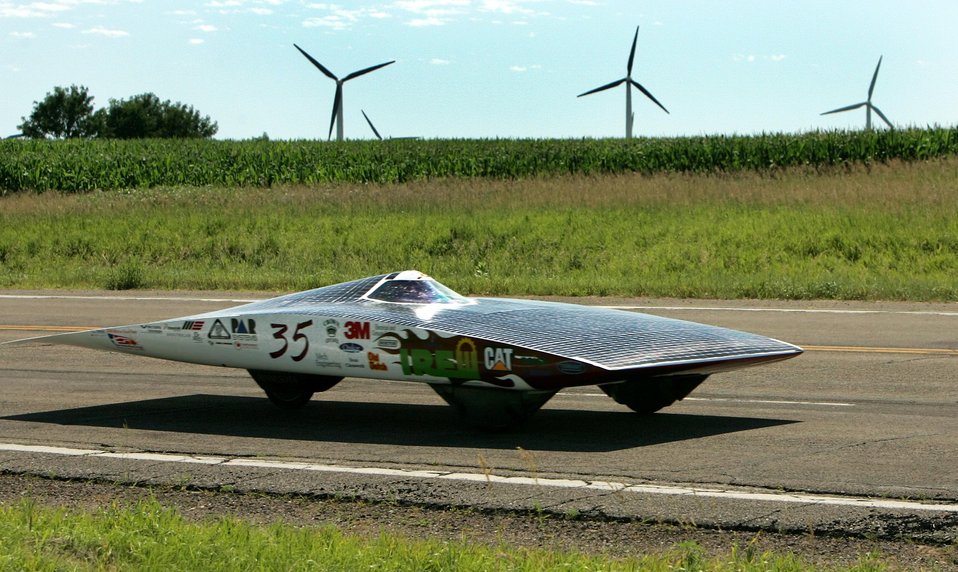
UNIVERSITY OF MINNESOTA IS SHOWN GOING THROUGH ITS HOME STATE PASSING BY LAKE BENTON, MINNESOTA, ALSO KNOWN AS THE ORIGINAL WIND POWER CAPITAL OF THE MIDWEST DURING THE 2005 NORTH AMERICAN SOLAR CHALLENGE.

SOME OF THE 200 WIND TURBINES THAT PROVIDE POWER FOR THE SURROUNDING AREA GRACE THE SKYLINE ALONG THE BUFFALO RIDGE, BRINGING CLEAN, RENEWABLE ENERGY TO THE FOREFRONT. THE 2005 NORTH AMERICAN SOLAR CHALLENGE (ASC) WAS A CROSS COUNTRY SOLAR RACE THAT WAS HELD FROM JULY 17 TO 27, 2005. THE RACE STARTED IN AUSTIN, TEXAS AND TRANS-CANADA HIGHWAY (HWY1) TO CALGARY, ALBERTA, CANADA. TEAMS FACED VARIED CLIMATES, TOPOGRAPHY AND ROAD CONDITIONS. IT WAS THE FIRST TIME THE WORLD'S LONGEST SOLAR CAR RACE WENT THROUGH THE U.S. AND CANADA